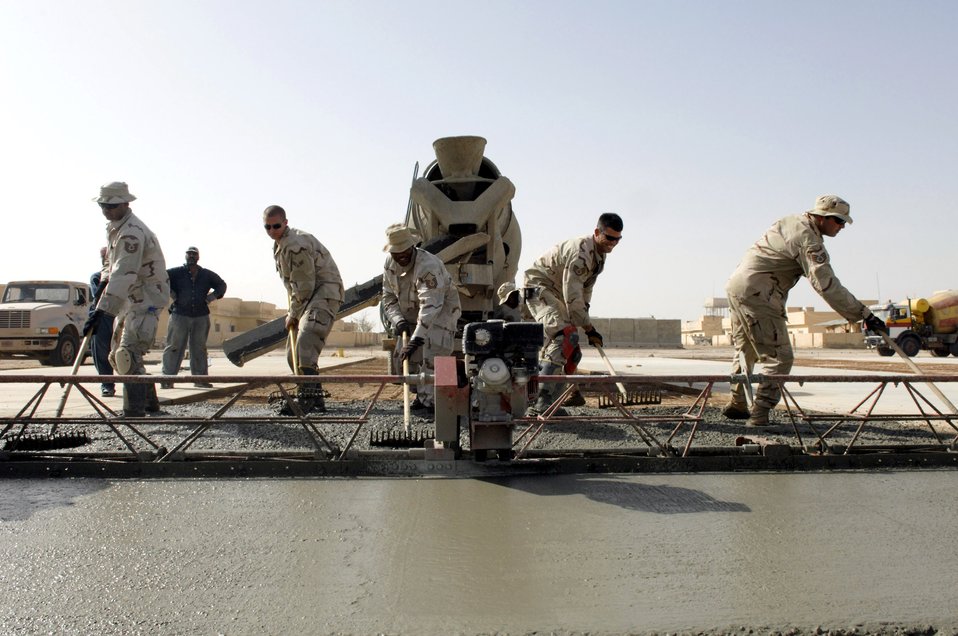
Civil engineers pave the way for Iraqi Army

Airmen from the 407th Expeditionary Civil Engineer Squadron at Ali Air Base, Iraq, level freshly poured cement June 11 while building a drill pad at Camp Mittica, Iraq. The 407th ECES is on the Iraqi base constructing a cement drill pad that will be used by the Iraqi army to train their enlisted soldiers.